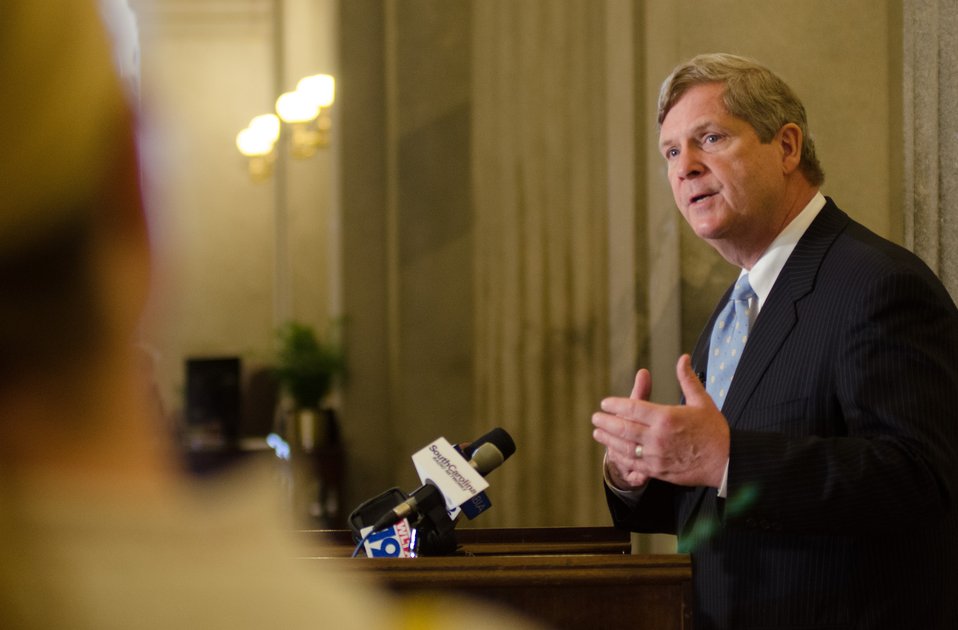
Agriculture Secretary Tom Vilsack (podium) and South Carolina Congressman James E. Clyburn hold a press conference in the South Caroline State Capitol in Columbia, SC after the kick off of the Strike Force Initiative For Rural Growth and Opportunity at Voorhees College in Denmark, SC, on Tuesday, Mar. 26, 2013.